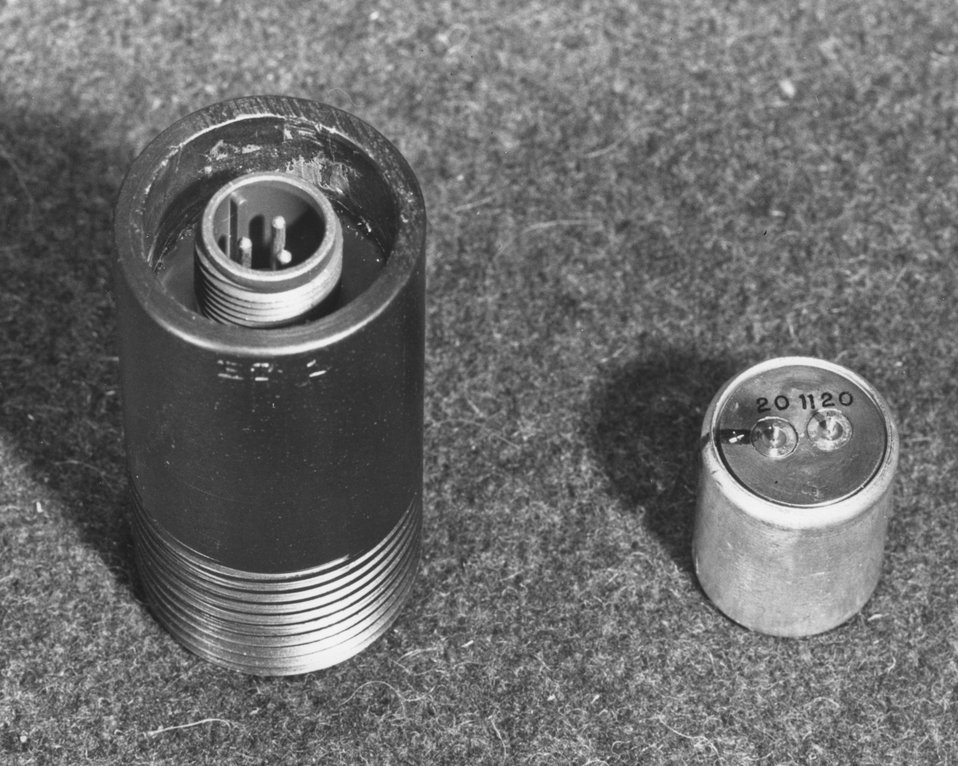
(Inter-agency work)...'Geophone' type sensing elements for vibration monitoring have been designed by the Paducah Gaseous Diffusion Plant, Paducah, Kentucky. The elements are rugged, sensitive and inexpensive. c. 1972